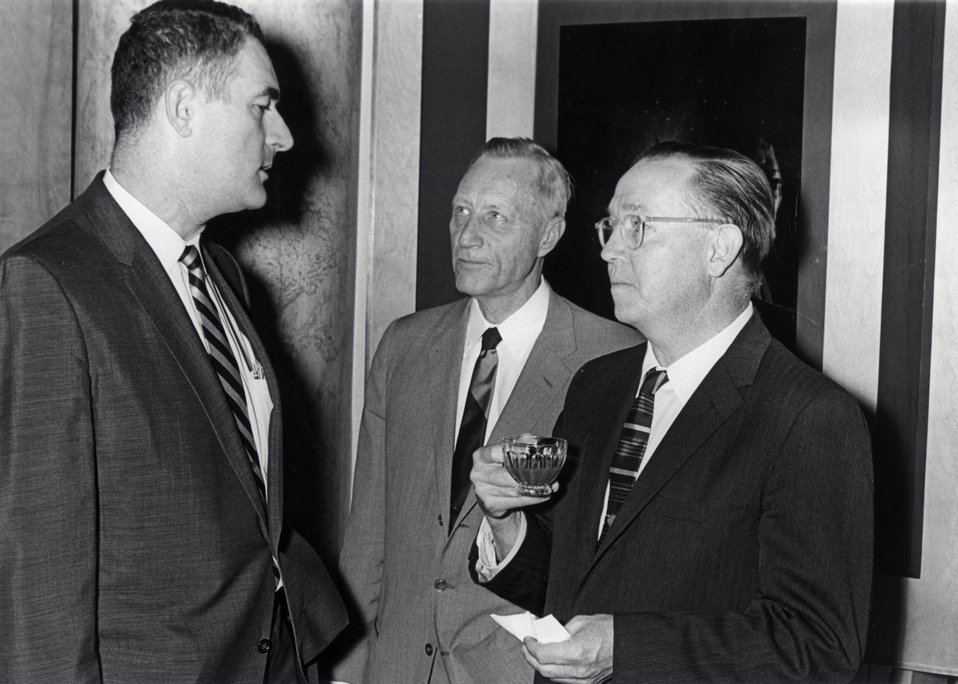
Shaw, Graham, Ramsey. First Lawrence Award Ceremony, in Washington, on June 27, 1960.